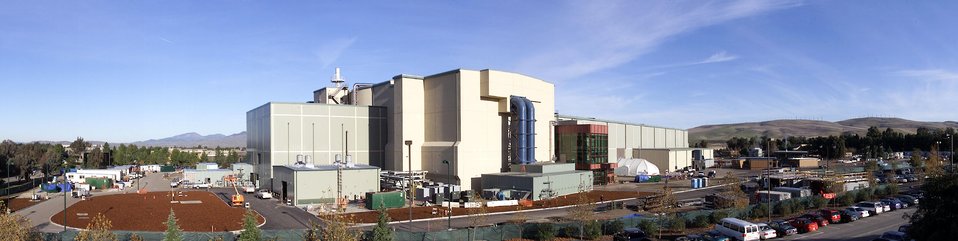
THE SOUTHWEST VIEW OF THE NATIONAL IGNITION FACILITY AT LAWRENCE LIVERMORE NATIONAL LABORATORY.

THE NATIONAL IGNITION FACILITY AT LLNL ENABLES KEY PROGRAMS AND TECHNOLOGIES THAT SUPPORT DOE'S NATIONAL NUCLEAR SECURITY ADMINISTRATION DEFENSE PROGRAMS AND LLNL MISSIONS, ENSURING THAT THE NATION'S NUCLEAR WEAPONS REMAIN SAFE, SECURE AND RELIABLE. NIF, ONE OF THE CORNERSTONES OF DOE'S STOCKPILE STEWARDSHIP PROGRAM, WILL INTEGRATE THE INERTIAL CONFINEMENT FUSION PROGRAM INTO THE OVERALL STOCKPILE STEWARDSHIP PROGRAM AND FOSTER THE DEVELOPMENT OF ASSOCIATED LASER TECHNOLOGIES.